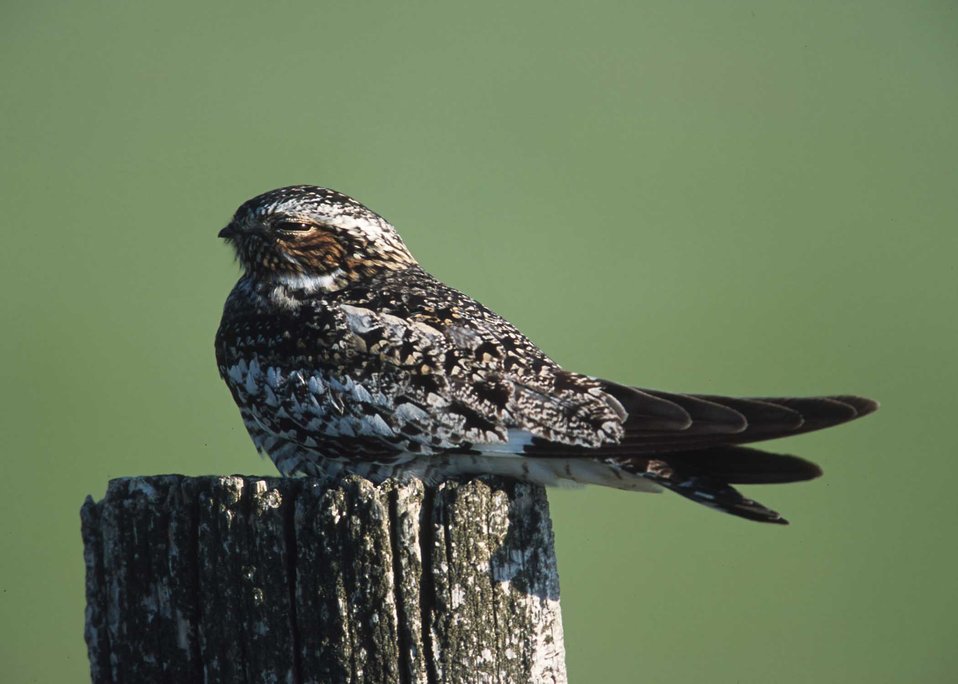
Common Night Hawk, Pawnee National Grassland.